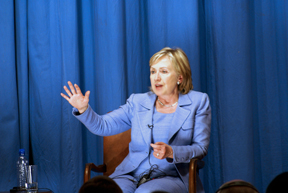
Secretary Clinton Conducts Town Hall Meeting With Congolese Students

U.S. Secretary of State Hillary Rodham Clinton conducts a town hall meeting with Search for Common Ground and Congolese University Students August 10, 2009 in Kinshasa, Democratic Republic of the Congo.